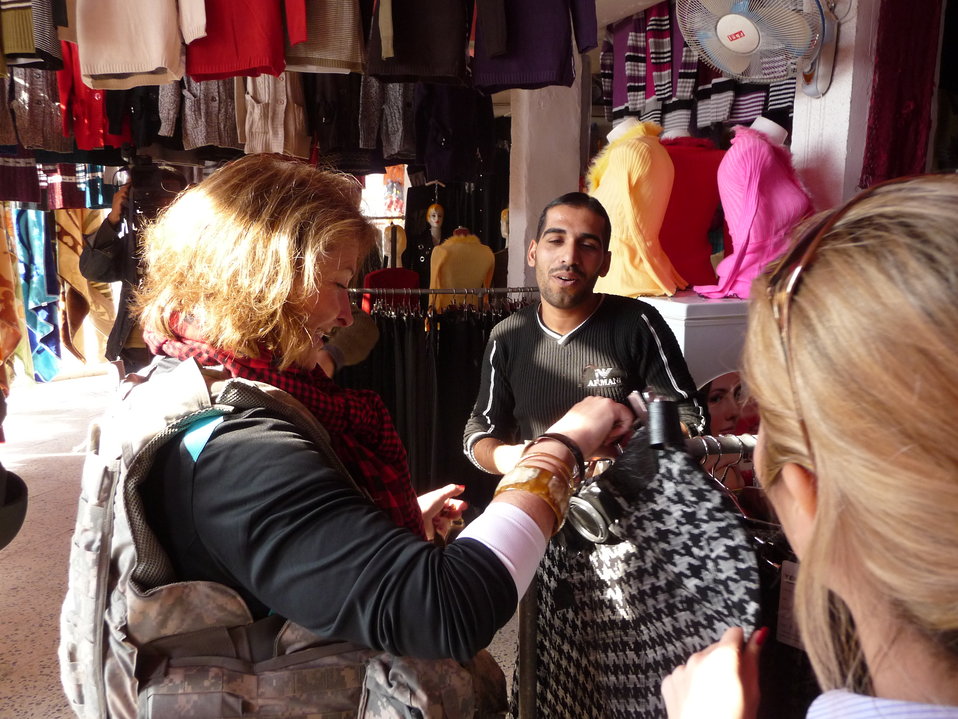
Greta Holtz Shops in Aruba Market

Greta Holtz (Embassy Baghdad) shops in Aruba Market, Muqdadiya, Iraq, December 2009.